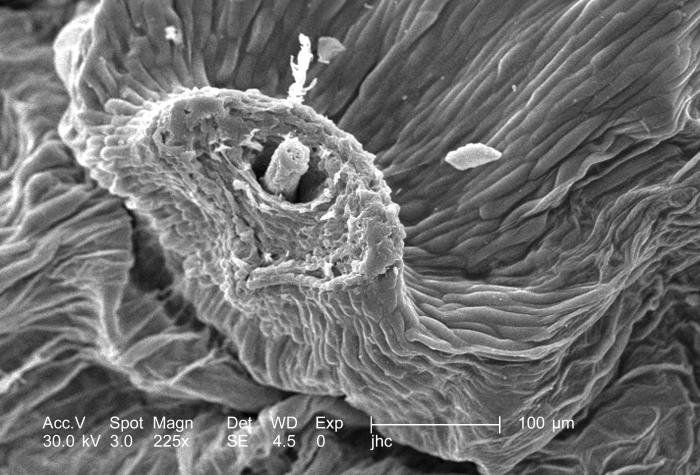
Under a moderate magnification of 225x, this 2006 scanning electron micrograph (SEM) depicted details of the morphologic surface characteristics of a "dandelion clock", from a Common Dandelion, Taraxacum officinale plant. The "clock" is the filamentous "puffball" of seeds arranged so as to be easily dispersed by the wind, or the breath of a curious child.In this field of view the remnants of a seed attachment is visible as a small nub protruding from a small papule. It is from these nub-like points that the "parachute"-equipped seeds detach, and are blown away, sometime over a distance of miles. Note that this is the second in a series of PHIL images, 8791-8796, in which the magnification is increased, thereby, providing greater and greater morphologic detail of the point of the developing seed attachment.